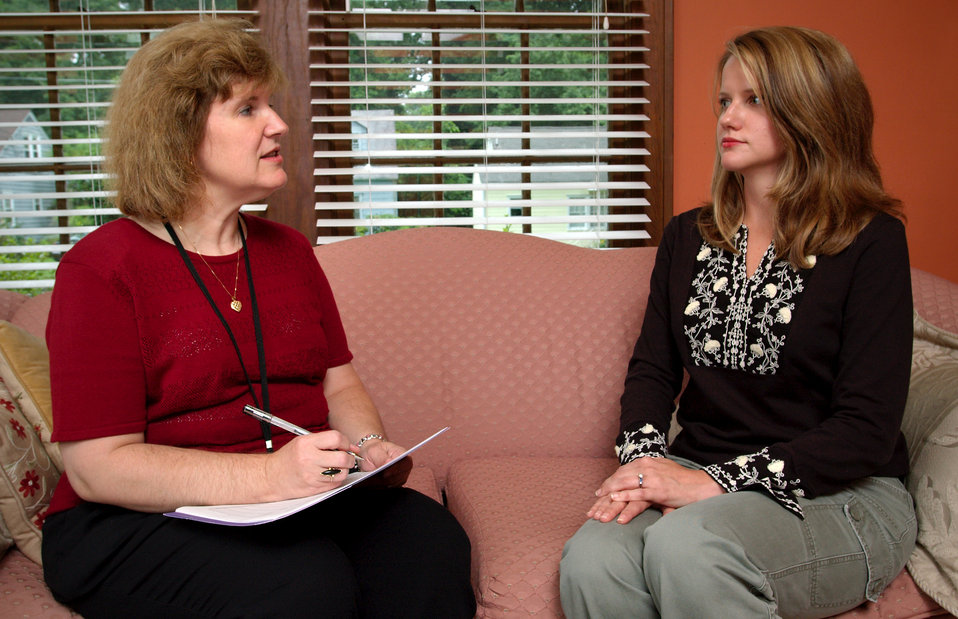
This photograph depicted a Center for Disease Control (CDC), National Center for Health Statistics (NCHS) employee (left), in the process of gathering medical information from a health survey participant. The NCHS compiles statistical information, used to help guide actions and policies that will improve the health of the nation's people. NCHS uses a variety of approaches to efficiently obtain information from its sources. They collect data from birth and death records, medical records, interview surveys, and through direct physical exams and laboratory testing. NCHS is a key element of our national public health infrastructure, providing important surveillance information that helps identify and address critical health problems.